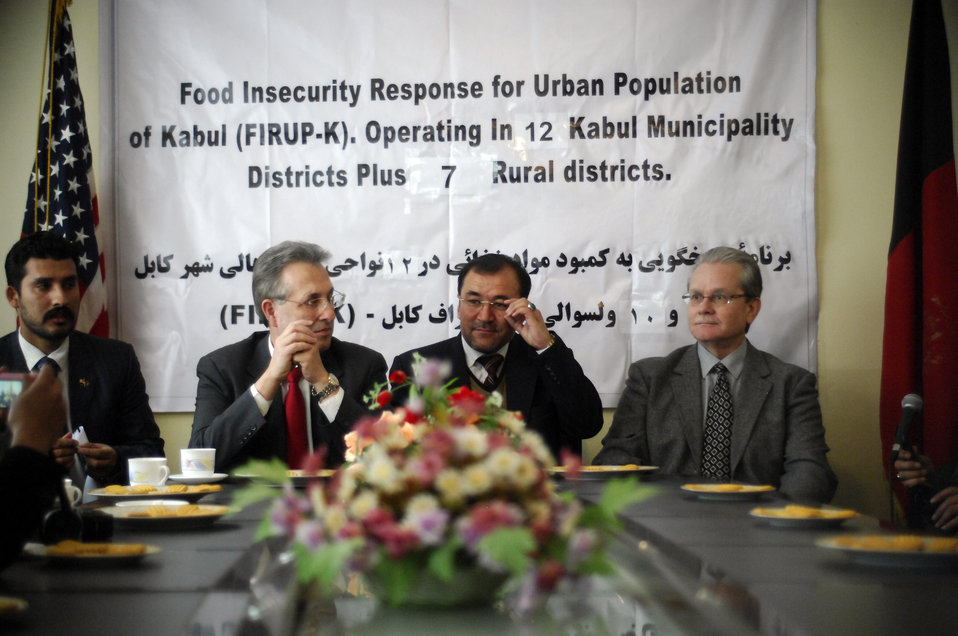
Care97 (1)